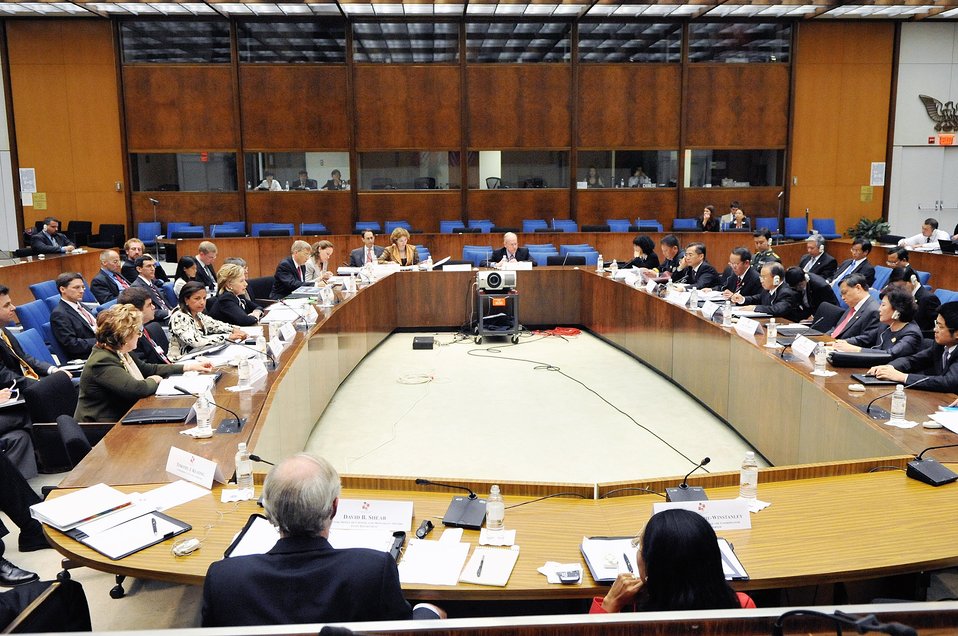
Secretary Clinton Attends U.S.-China Strategic and Economic Dialogue

U.S. Secretary of State Hillary Rodham Clinton at the Strategic Track Session 1 on Bilateral Relations during the U.S.-China Strategic and Economic Dialogue at the U.S. Department of State in Washington, DC July 27, 2009.